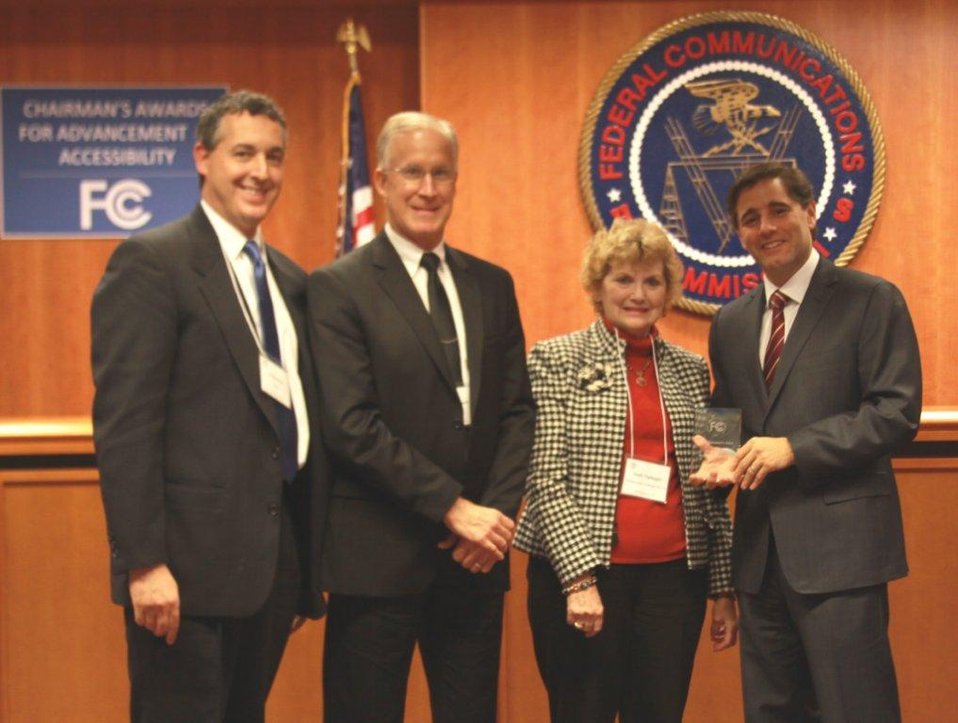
Neely Oplinger, Metropolitan Washington Ear, Mike Dahnert, Best Buy, Al Shuldiner Ibiquity, Accept Consumer Empowerment Information Award

Neely Oplinger, Mike Dahnert, Al Shuldiner accept Consumer Empowerment Information Award from Chairman Genachowski for Project StAR.